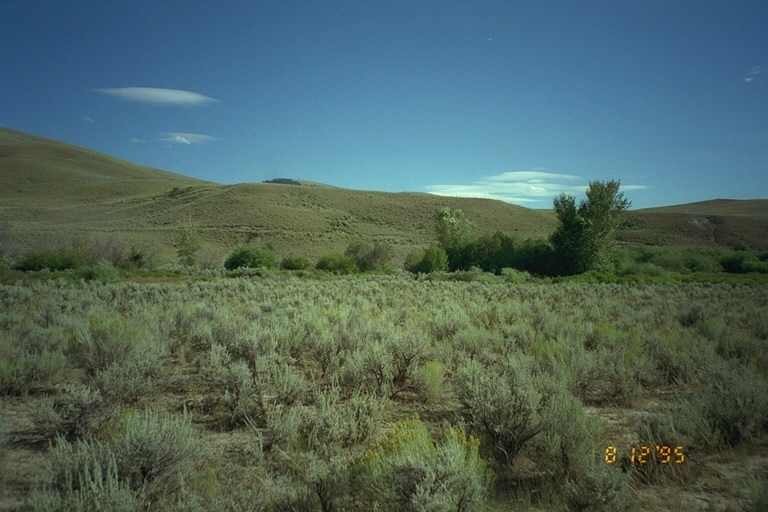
Riparian area Public Lands Salmon Field Office UCSC Upper Columbia Salmon Clearwater District